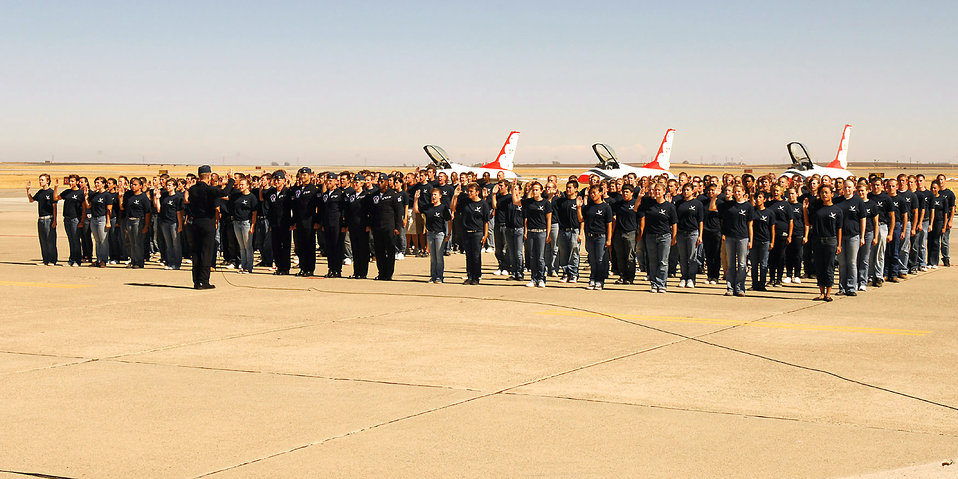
Record-setting swearing-in ceremony

Lt. Col. Greg Thomas, the Air Force Thunderbirds commander, administers the oath of enlistment Aug. 30 to 154 future Airmen at Travis Air Force Base, Calif. The group, members of the 364th Recruiting Squadron Delayed Entry Program, were sworn in at the Travis Air Expo 2008 before a crowd of more than 80,000 airshow spectators. The event is the largest DEP swear-in ceremony to date.